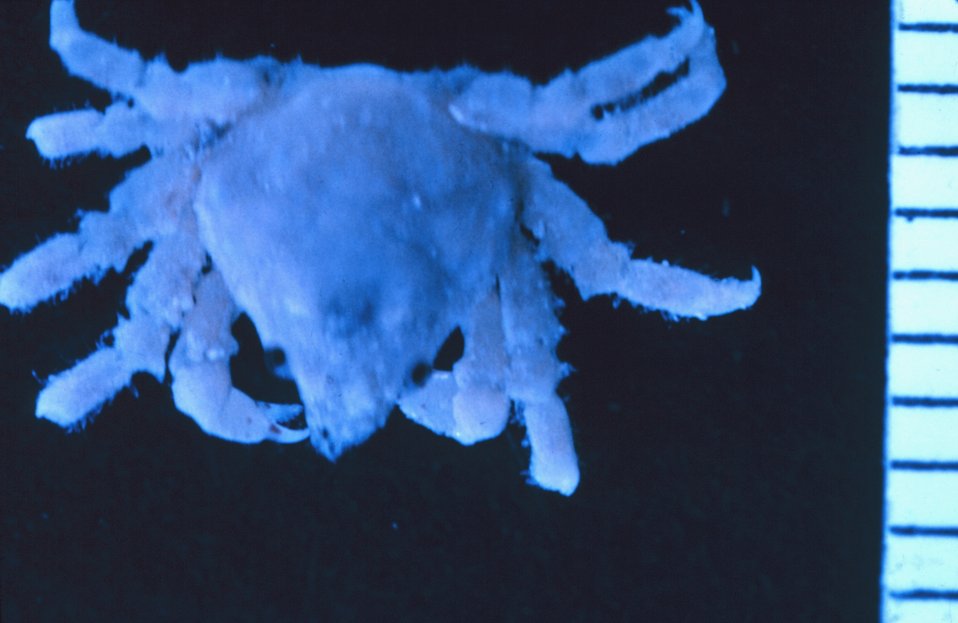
Unidentified crab.